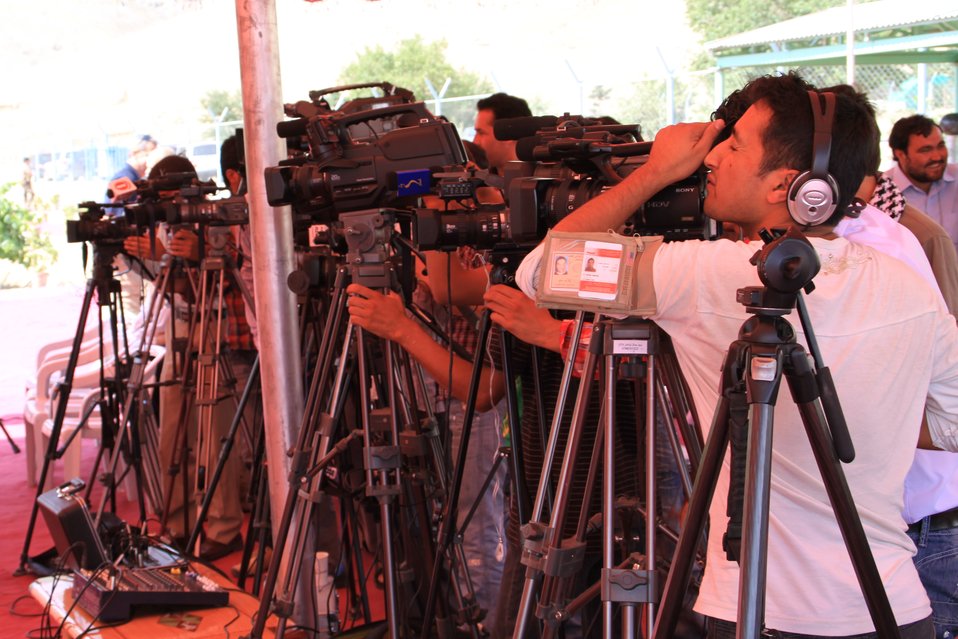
Badam Bagh Farm